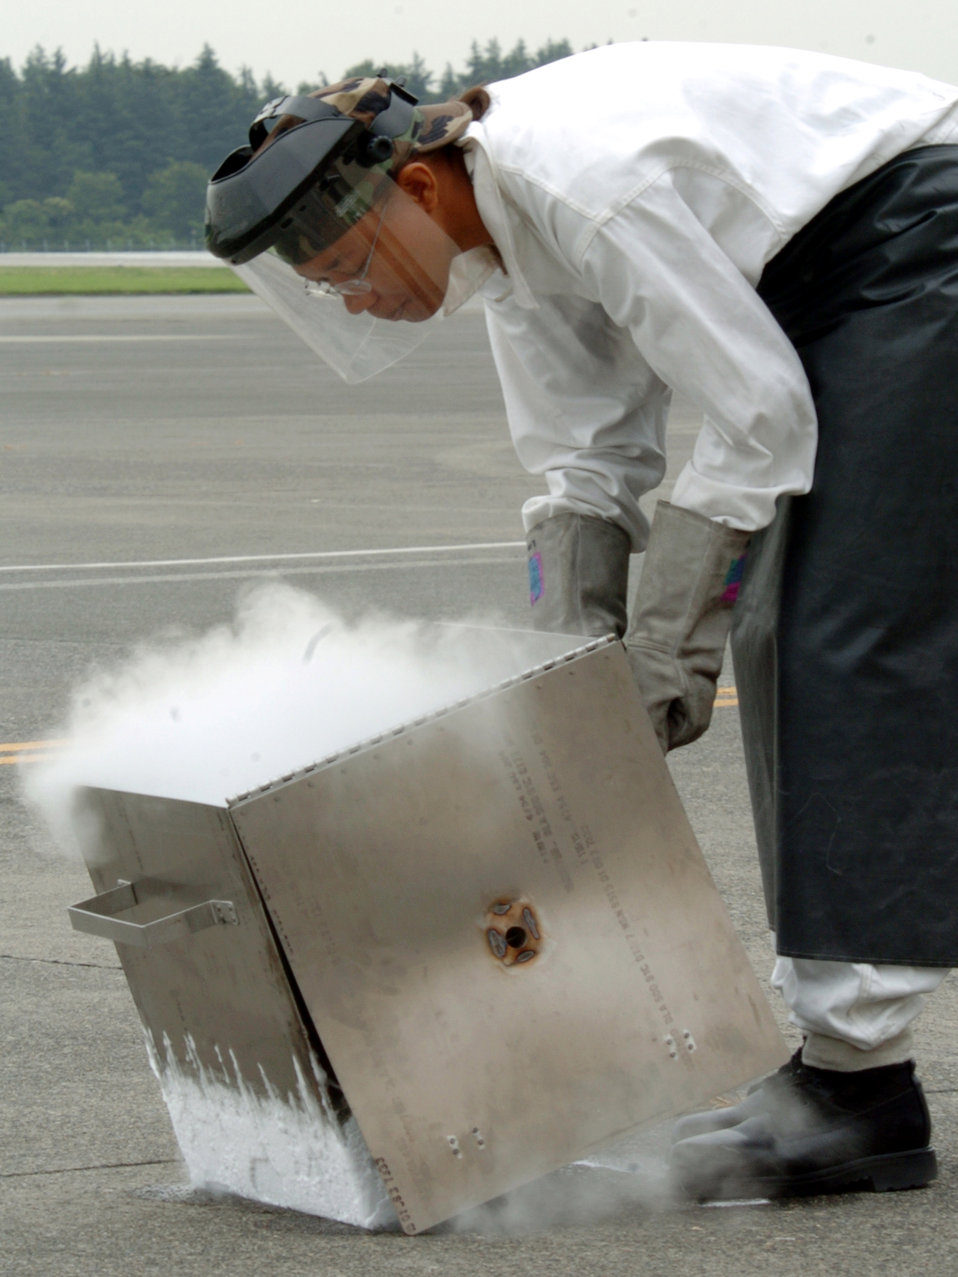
A draining task

YOKOTA AIR BASE, Japan -- Airman 1st Class Andrea Jones checks liquid oxygen evaporating inside a metal container. Technicians with the 374th Maintenance Squadron here ensure valves, discs, hoses and plumbing lines on liquid oxygen carts are in good condition.